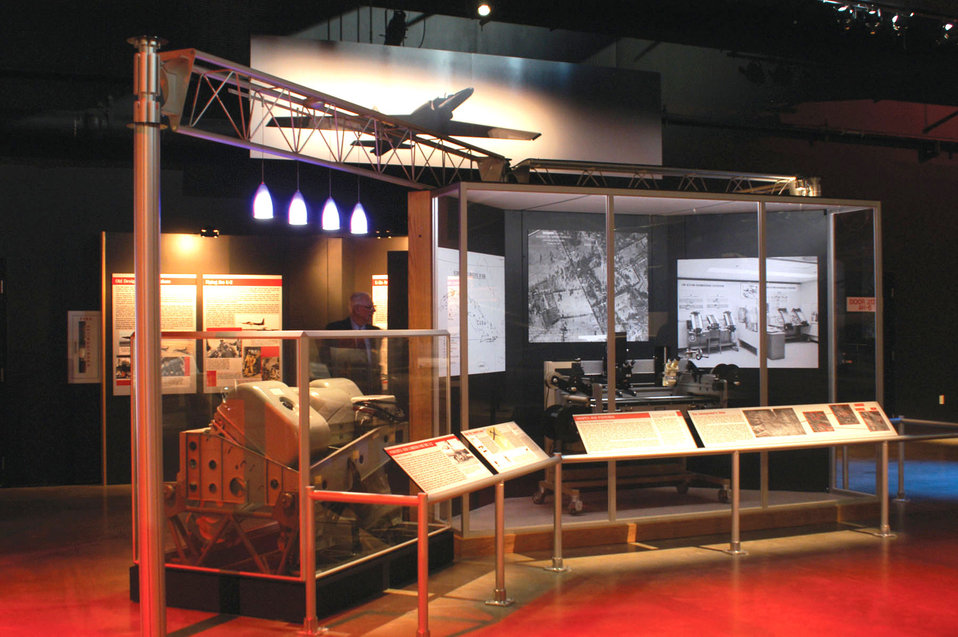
U-2, early Cold War reconnaissance exhibit open at museum

DAYTON, Ohio -- A visitor looks at the U-2 Dragon Lady exhibit in the Cold War Gallery at the National Museum of the United States Air Force here. The exhibit opened to the public June 15.